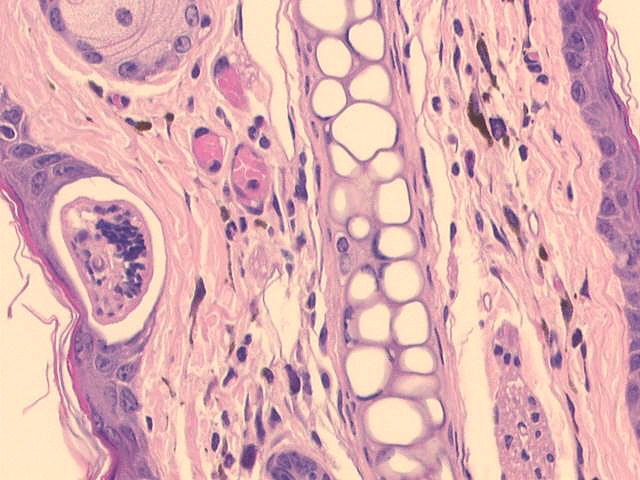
Schistosomulum in ear skin of a naive mouse.